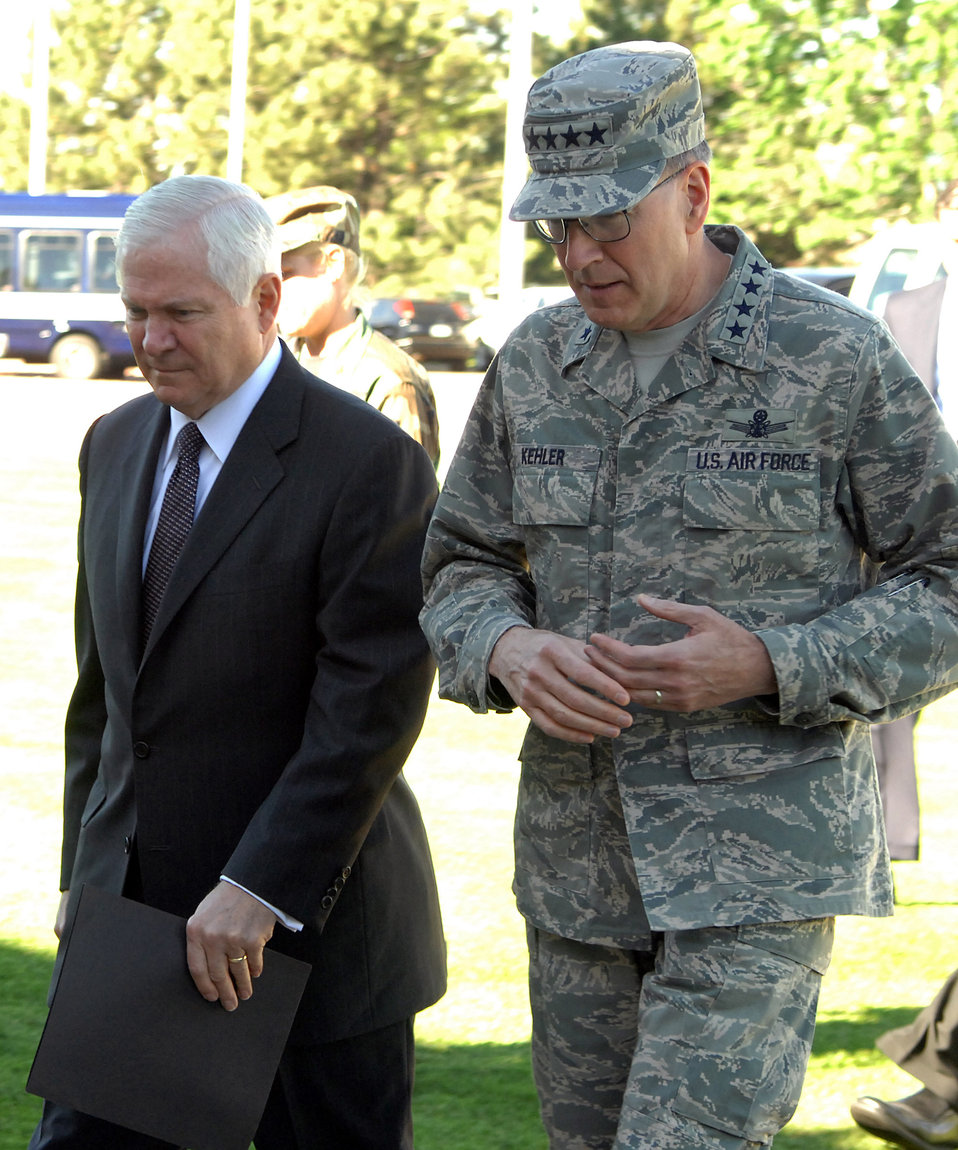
Defense secretary: Increase focus on nuclear mission

Secretary of Defense Robert M. Gates and Gen. C. Robert